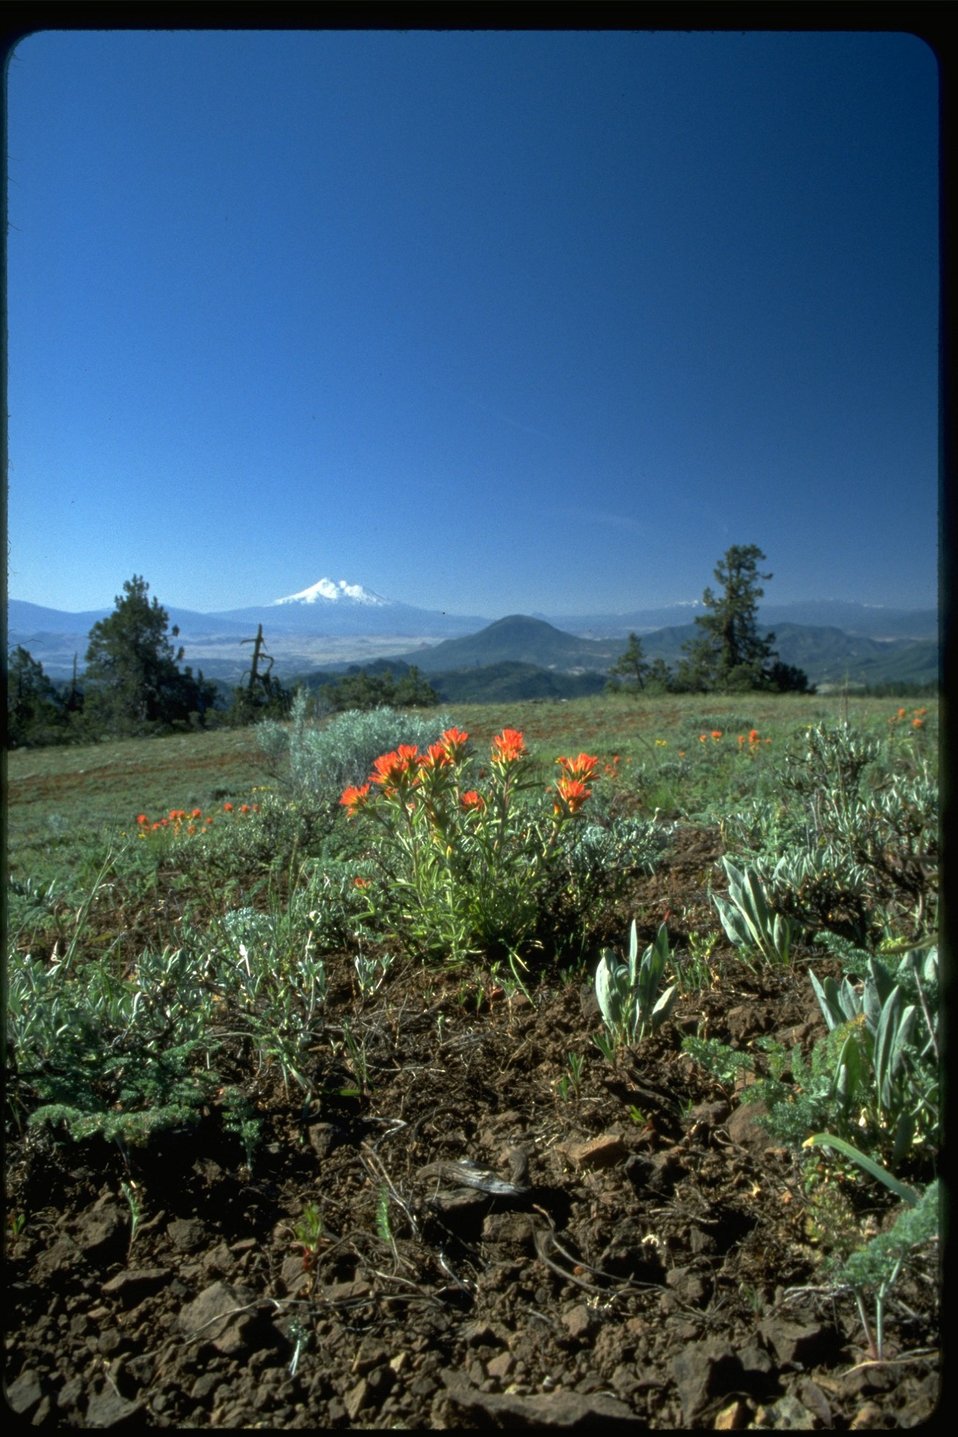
Telephoto shot of Mt. Shasta with Indian Paintbrush wildflowers in foreground, Cascade-Siskiyou National Monument (CSNM).